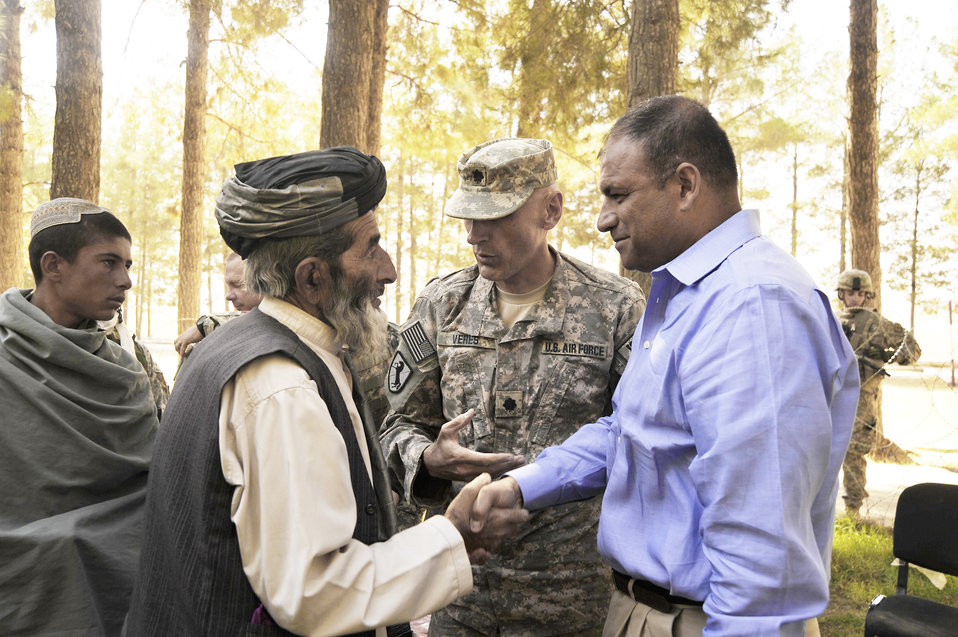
Political Campaign

U.S. Air Force Lt. Col. Andy Veres, Commander of Provincial Reconstruction Team Zabul, introduces Department of State representative Jesse Alvardo to locals after a speech by the governor here Oct. 23, 2009. The governor is encouraging residents to vote so they can improve their county.